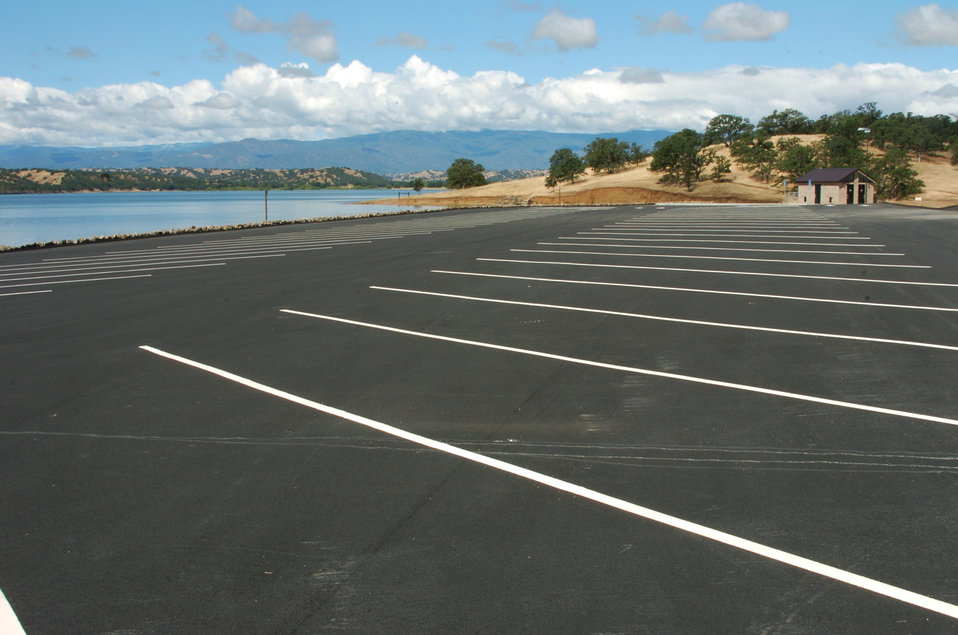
New boat ramp opens at Black Butte Lake

A new parking lot at Black Butte Lake, Calif., awaits summer visitors May 18, 2011. The parking lot was added as part of a boat ramp expansion project funded by a grant from the California Department of Boating and Waterways.